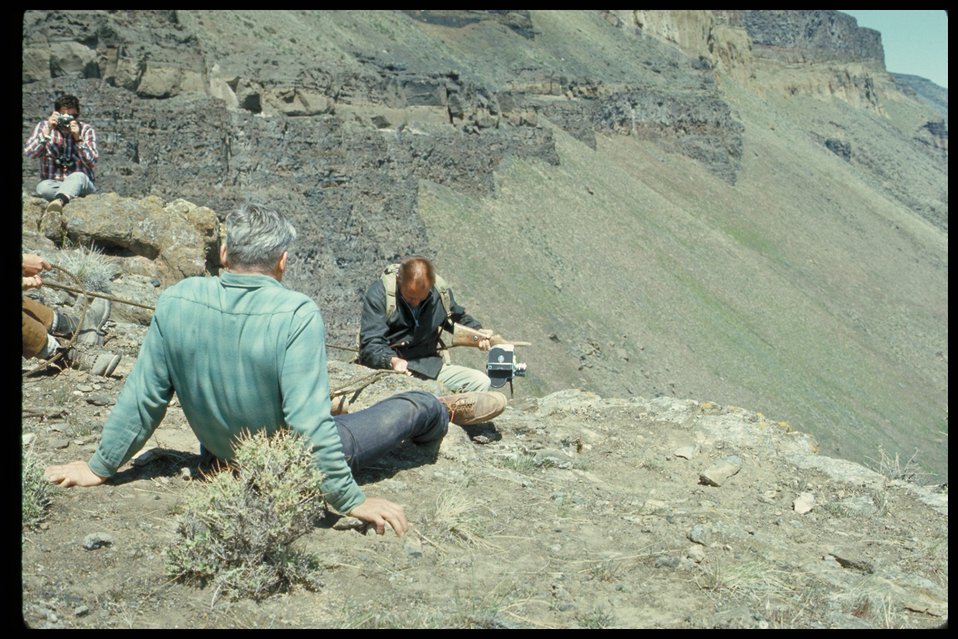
Roping down to Eagle nest Swan Falls Birds of Prey National Conservation Area BOP Owyhee Field Office LSRD Lower Snake River District